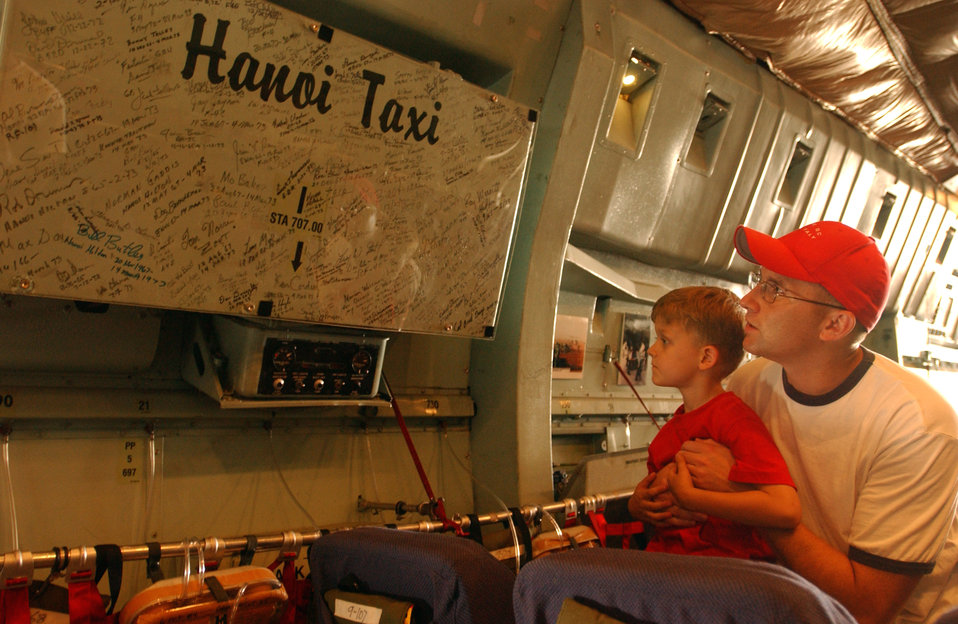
Former POWs relive freedom flights

Tech. Sgt. Robert Schultz shows his son, Jordan, the wall of signatures aboard the C-141 Starlifter known as the